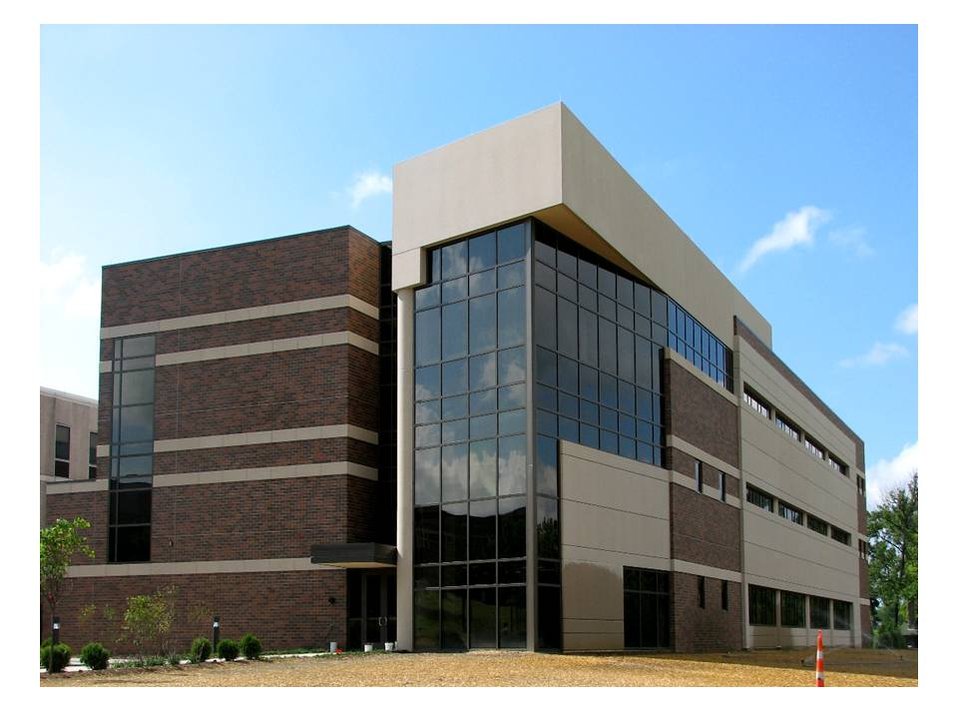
Wright-Patt recognized for energy efficient building

Air Force Institute of Technology’s new academic building at Wright-Patterson Air Force Base recently received the base's first Leadership in Energy and Environmental Design “Silver” certification rating. The effort is an Air Force initiative for improving energy efficiency and natural resource conservation at its installations while establishing safe, healthy and productive built environments and facilities.